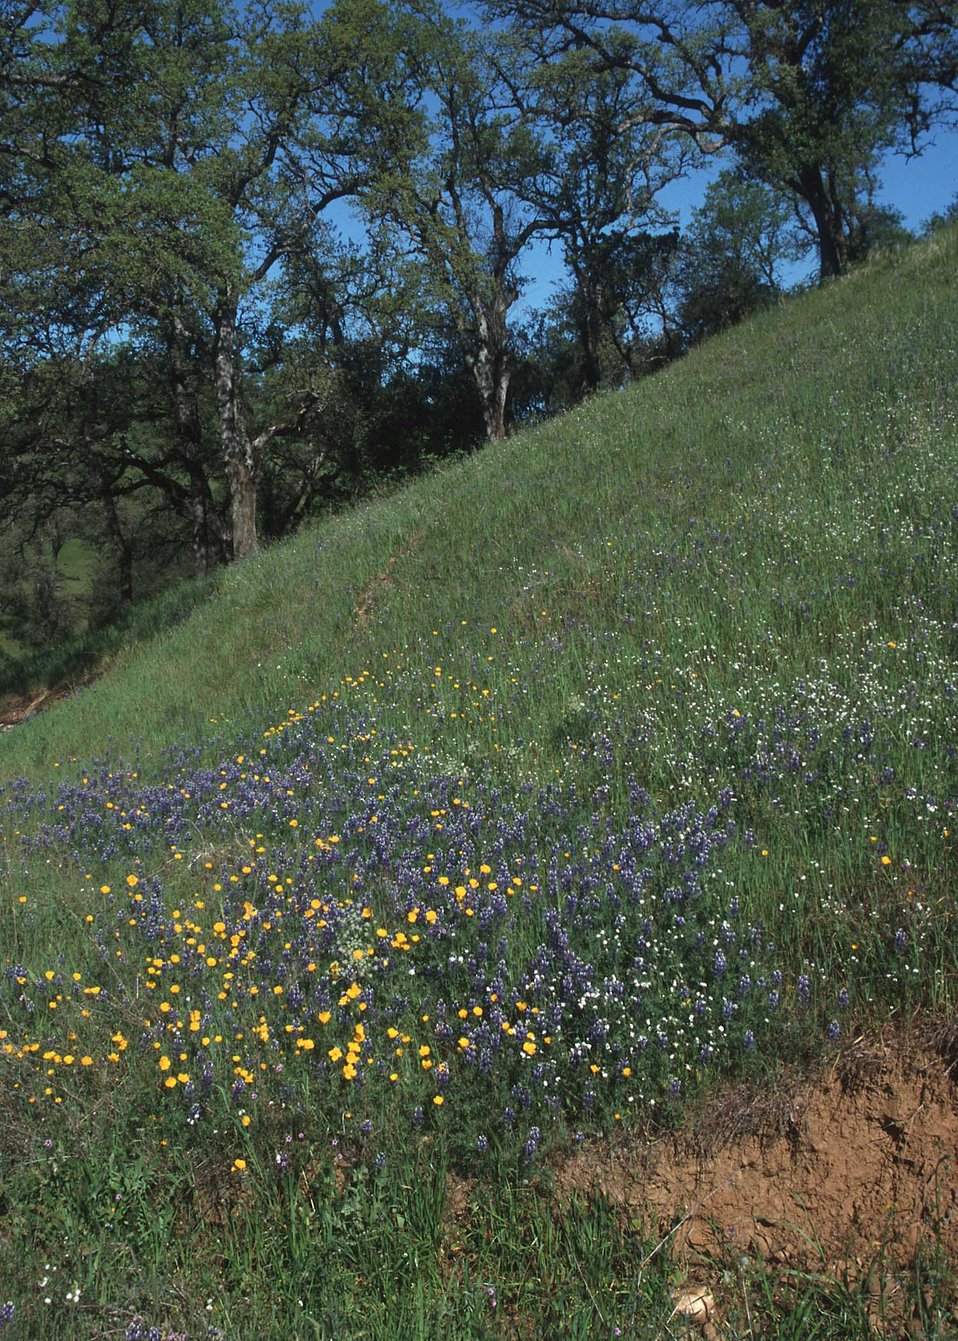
This hillside covered with wildflowers provides open space for wildlife and adds diversity to the landscape.